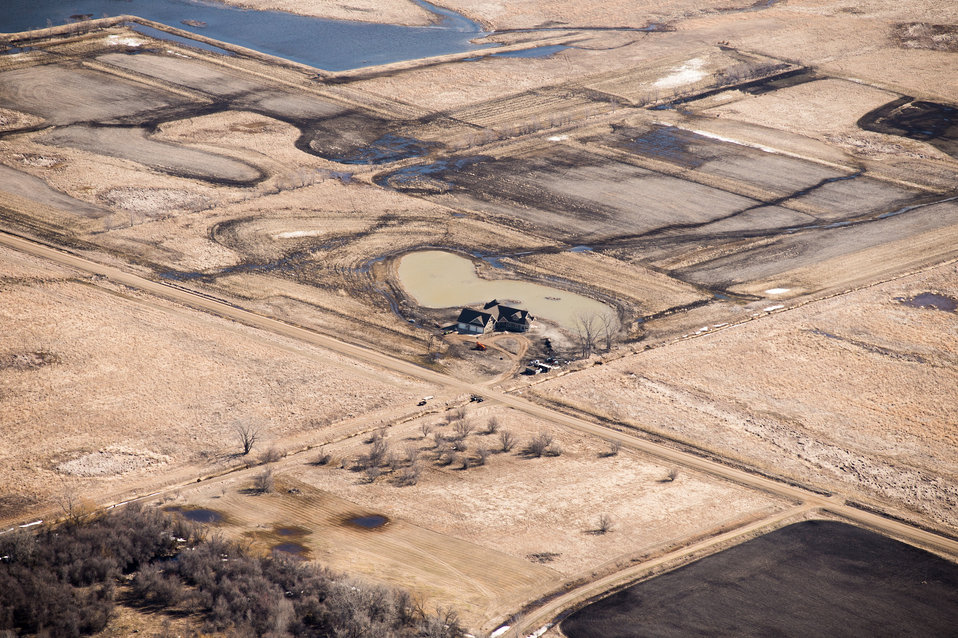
Ehlert North U.S. Department of Agriculture (USDA) Natural Resources Conservation Service (NRCS) Wetland Reserve Program (WRP) in Wilkin County, MN, on Tuesday, April 30, 2013. For information about this and other programs from the USDA Red River Basin Initiative (RRBI) please see www.mn.nrcs.usda.gov/news/features13/RRBI.html.